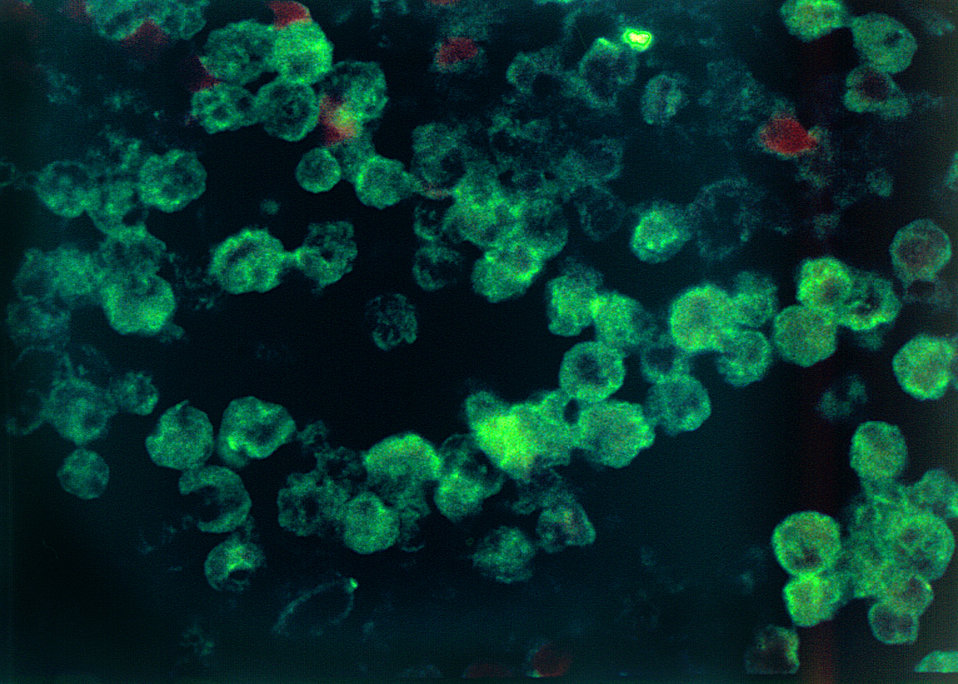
Photomicrograph of amebic meningoencephalitis due to Naegleria fowleri.